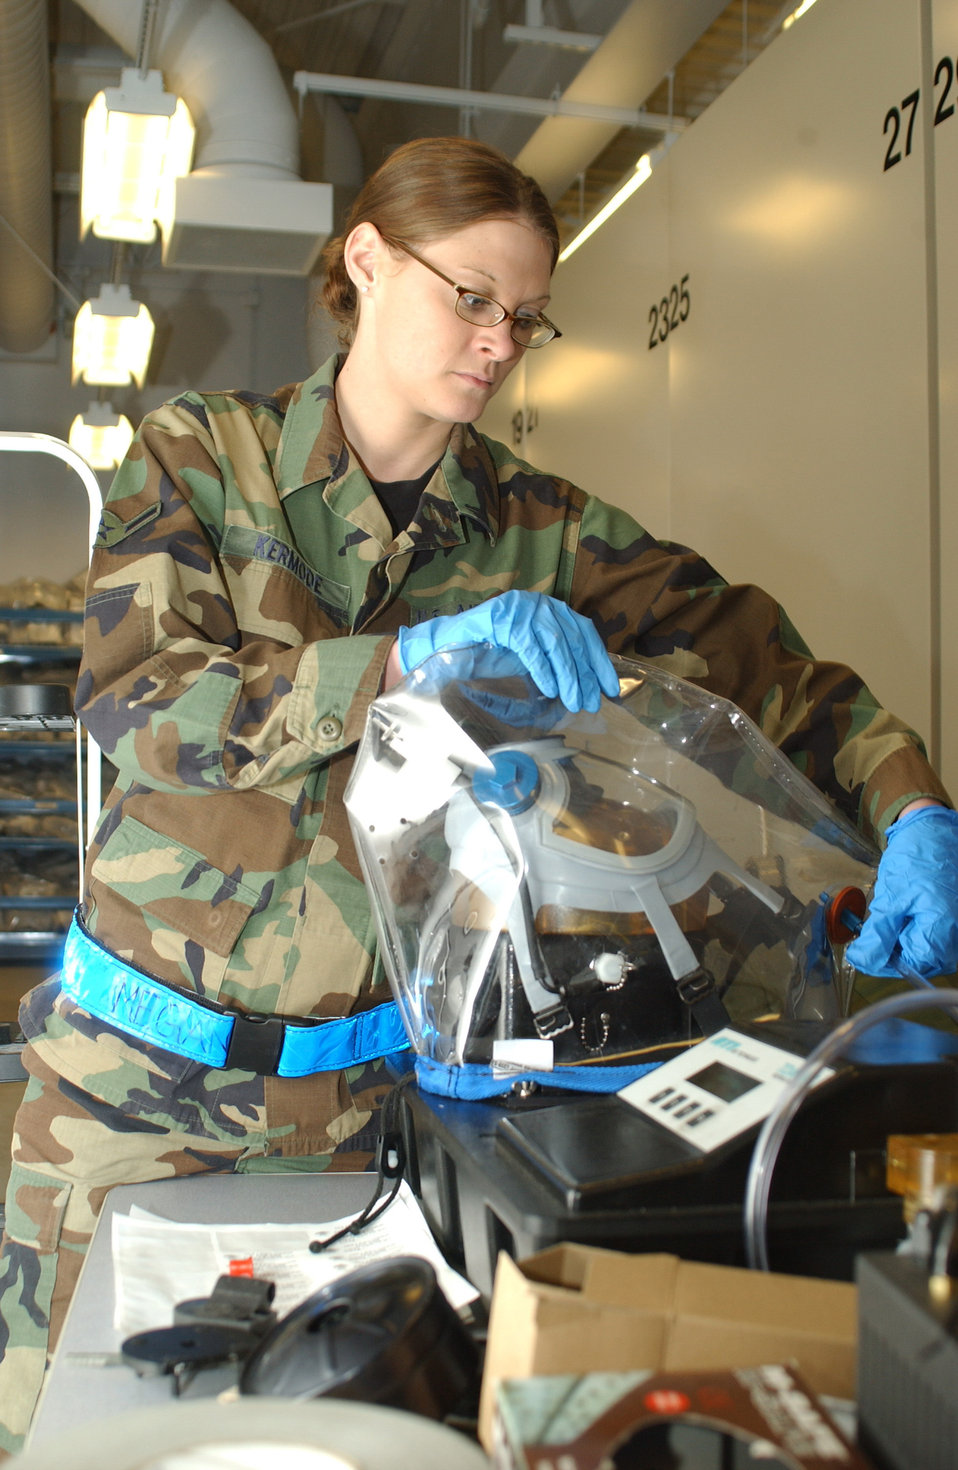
The fit test

EIELSON AIR FORCE BASE, Alaska -- Airman Megan Kermode tests and inspects gas masks with a protective mass assessment team machine here Jan. 25 during the wing's operational readiness inspection. Airman Kermode is assigned to the 354th Logistics Readiness Squadron.